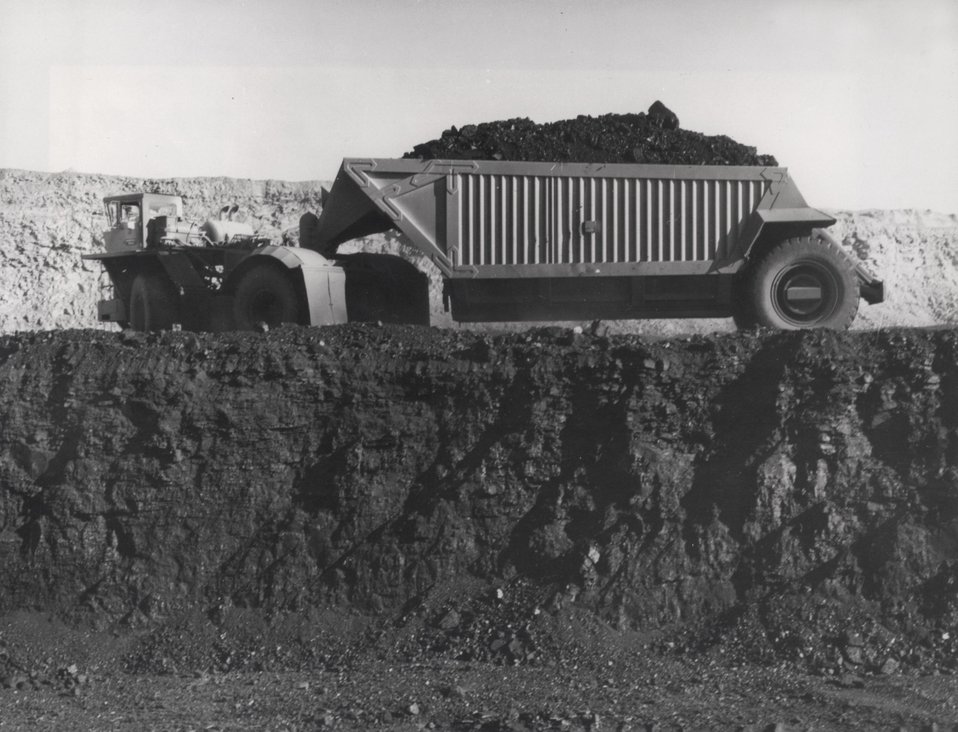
A 120 ton hauler loaded with subbituminous coal is leaving the mine and headed for the Jim Bridger Power plant about 6 miles to the south where it will be converted into electricity. c. 1976